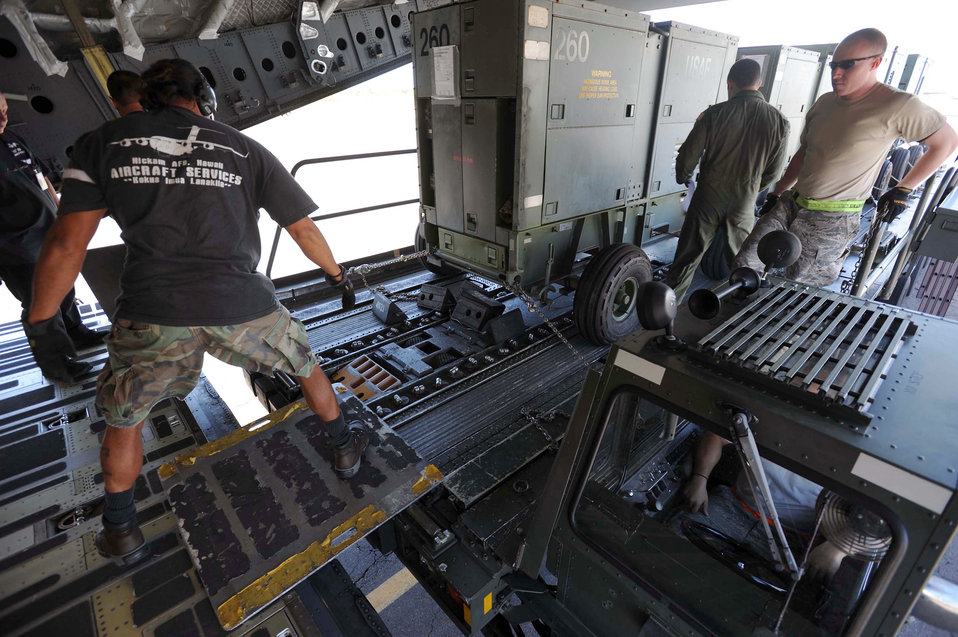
humanitarian mission to Japan

735th Air Mobility Squadron ramp service specialists and 535th Airlift Squadron loadmasters load generators onto a C-17 in preparation for its departure on a humanitarian mission to Japan Mar. 12, at Joint Base Pearl Harbor-Hickam, Hawaii. The plane will visit various Air Force bases in Japan during its mission to provide support for Japan relief efforts in the wake of tsunami and earthquake damage there.